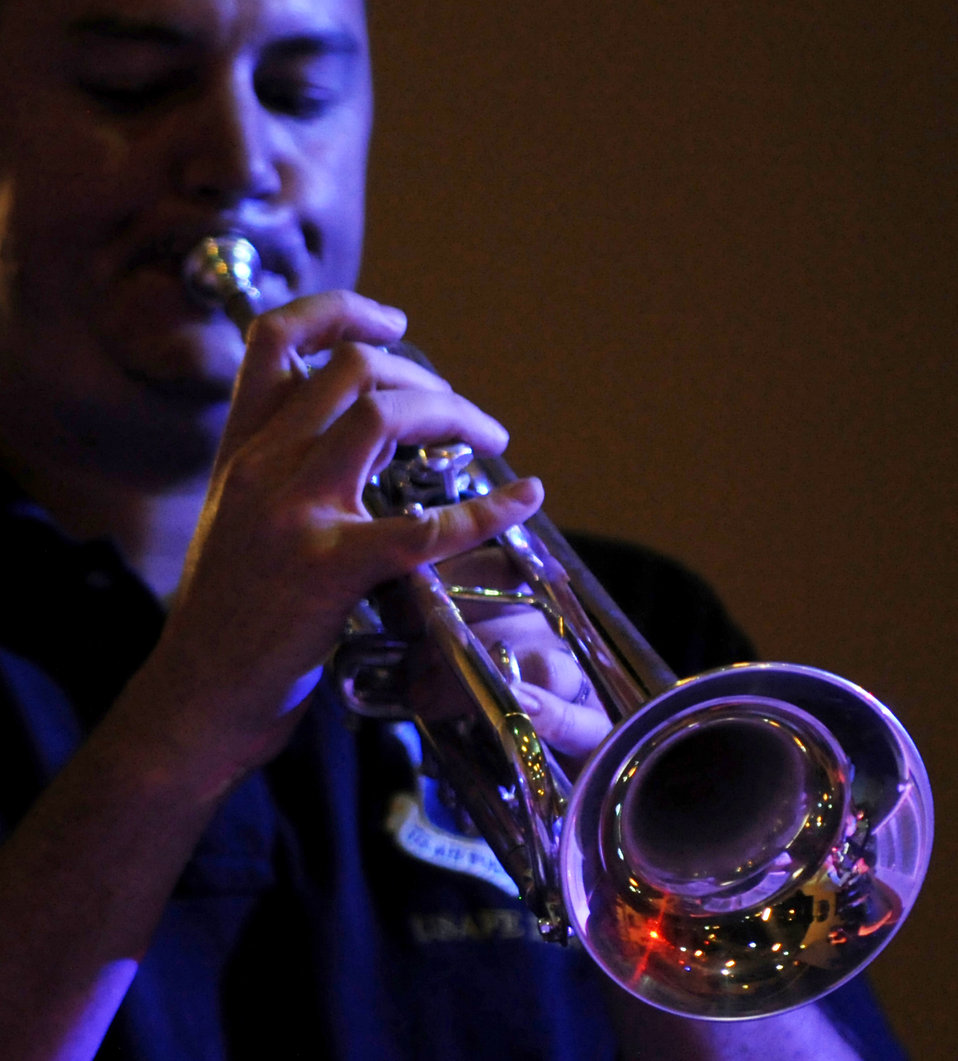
Blue notes

Staff Sgt. Shane Kibbey performs at the enlisted club at Ramstein Air Base, Germany, Aug. 21. Sergeant Kibbey is with the U.S. Air Forces in Europe Band's